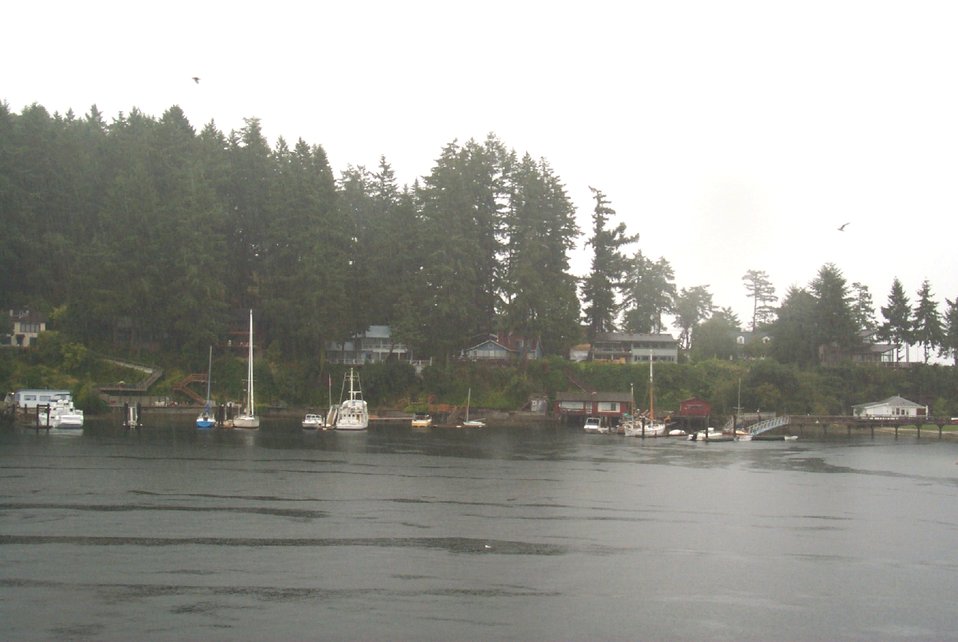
A rainy day at Gig Harbor.